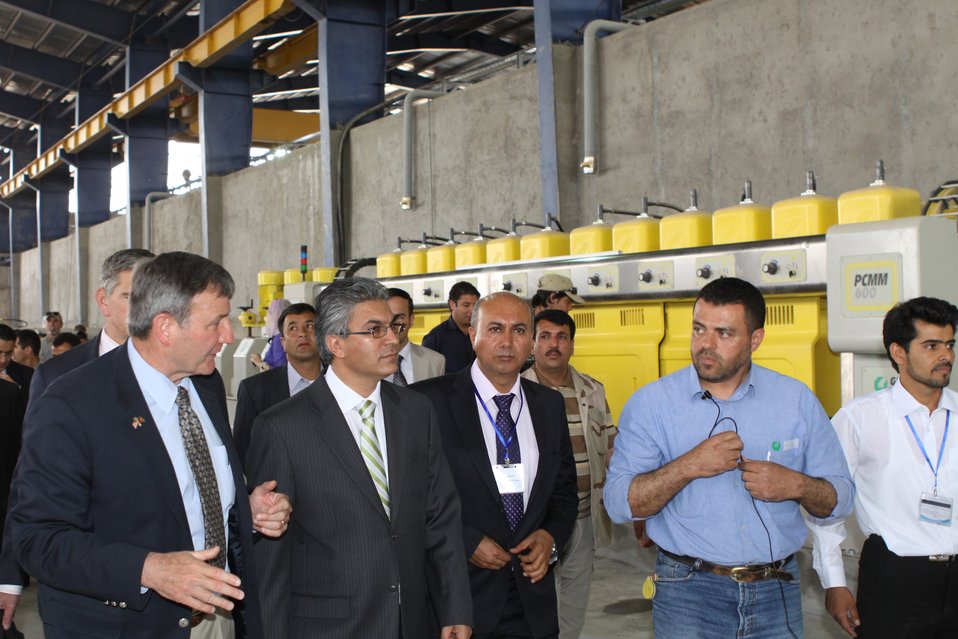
100525 Hirat Marble Conference 404